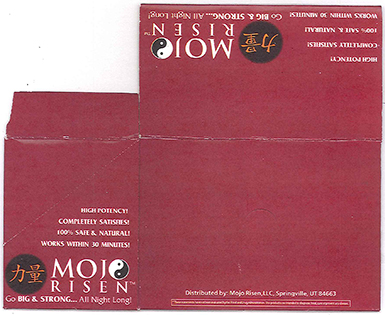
RECALLED – Dietary Supplement

April 1, 2014 – Product Recall – Nova Products, Inc. Issues Voluntary Nationwide Recall of Dietary Supplements with Undeclared Active Pharmaceutical Ingredients.